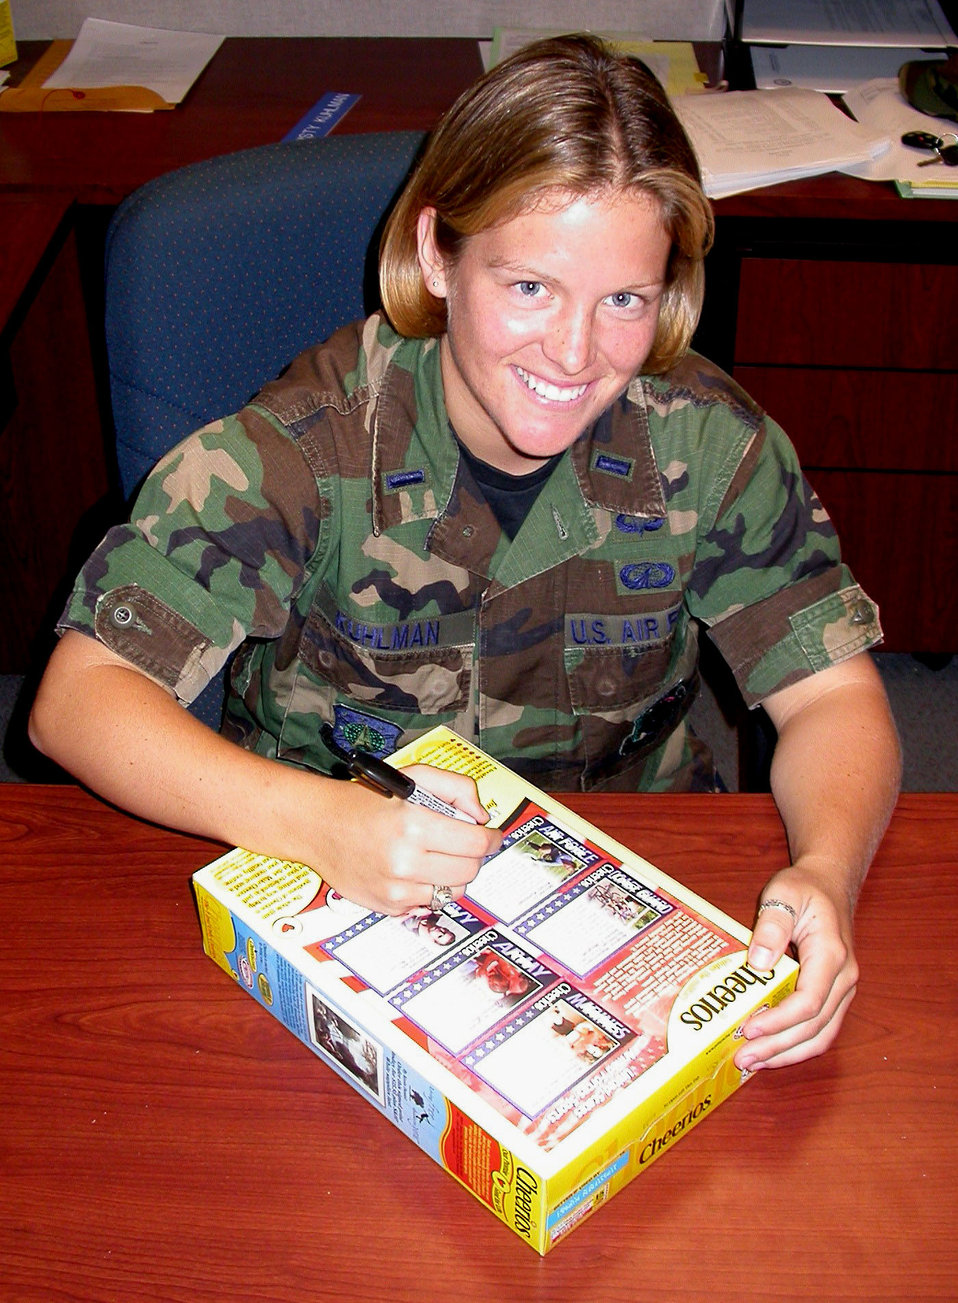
Female athlete of the year

LOS ANGELES AIR FORCE BASE, Calif. (AFPN) -- First Lt. Kristy Kuhlman, the Air Force's reigning female athlete of the year and star soccer player, autographs a Cheerios box at her desk at the Space and Missile Systems Center here. The box features Kuhlman, a contracting officer, and an armed forces athlete from each of the other four services. Commemorative boxes are sold in military commissaries worldwide.